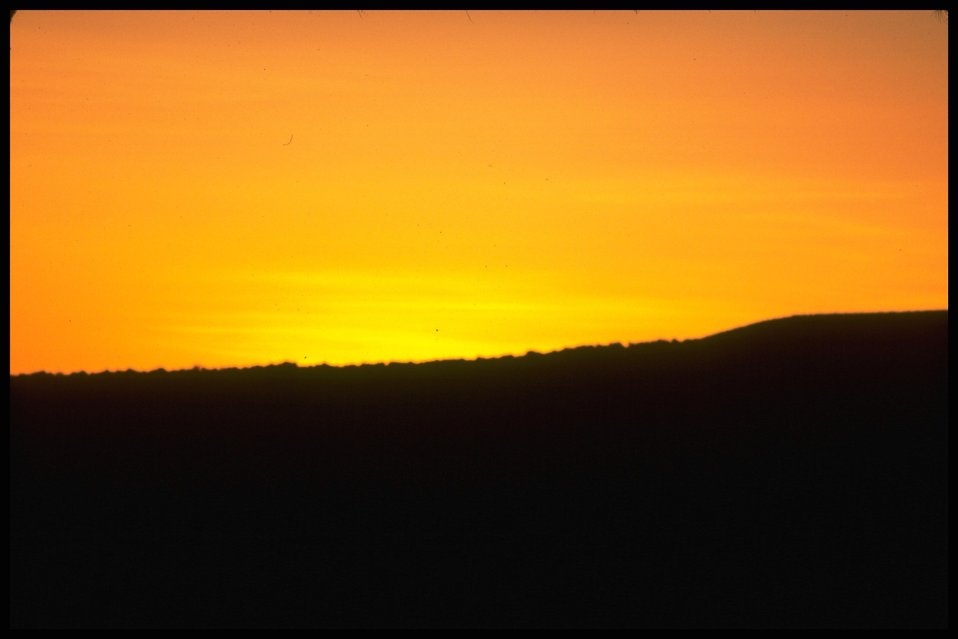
Lakeview District sunrise.